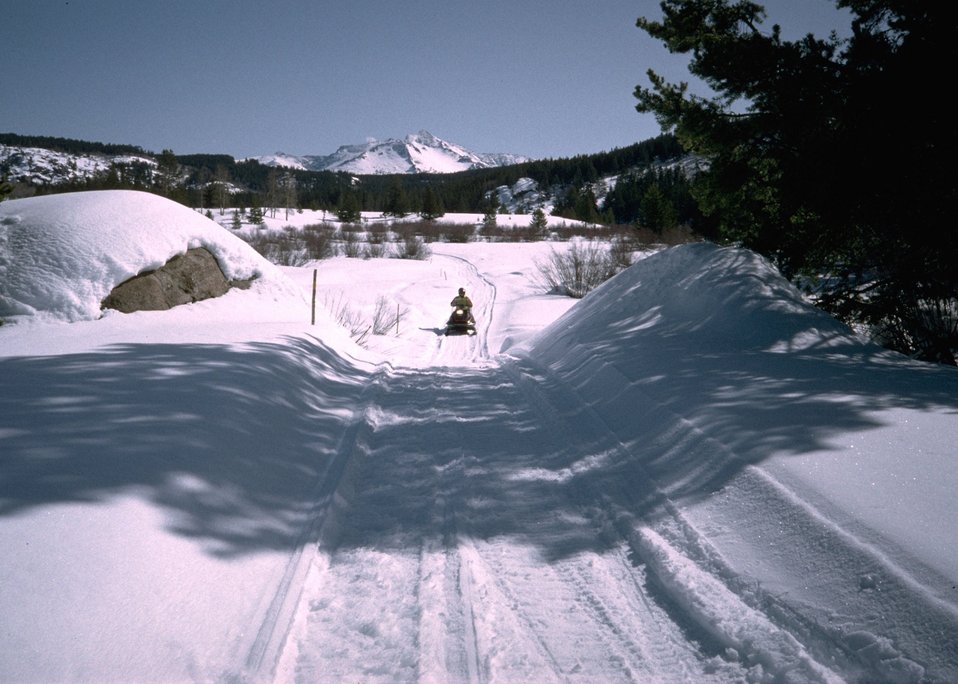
Snowmobiling on a mountain site.